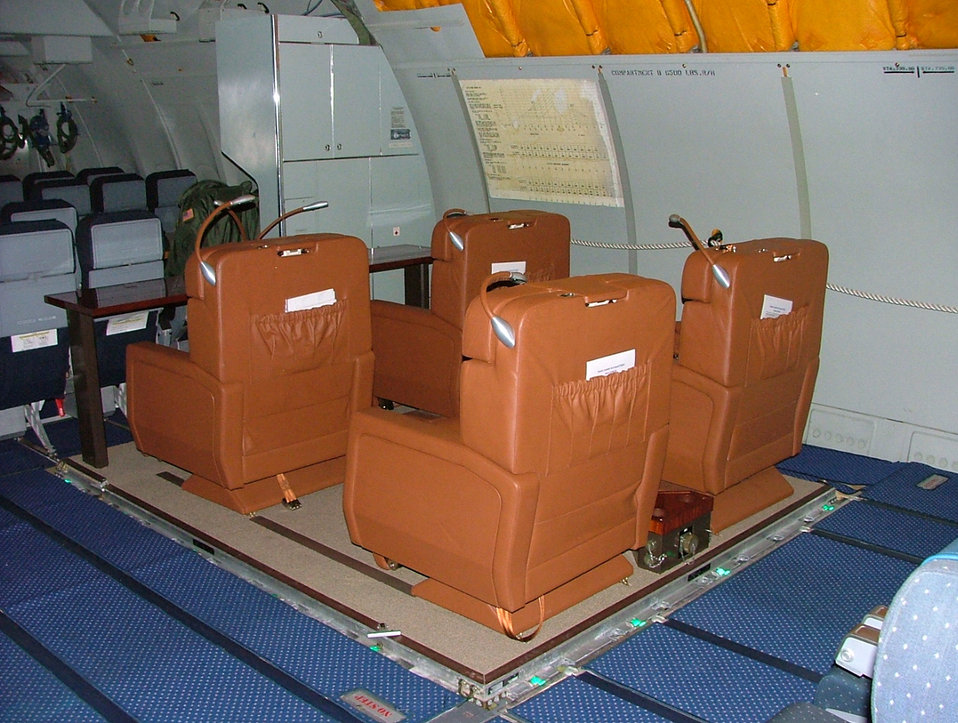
Air Force officials buy 'offices in the air'

Air Force officials are purchasing removable mobile command workspaces for use by military and senior civilian leaders who must use military aircraft for travel. Shown here is the Senior Leaders In-transit Pallet for use on C-17s, KC-10s and KC-135s.